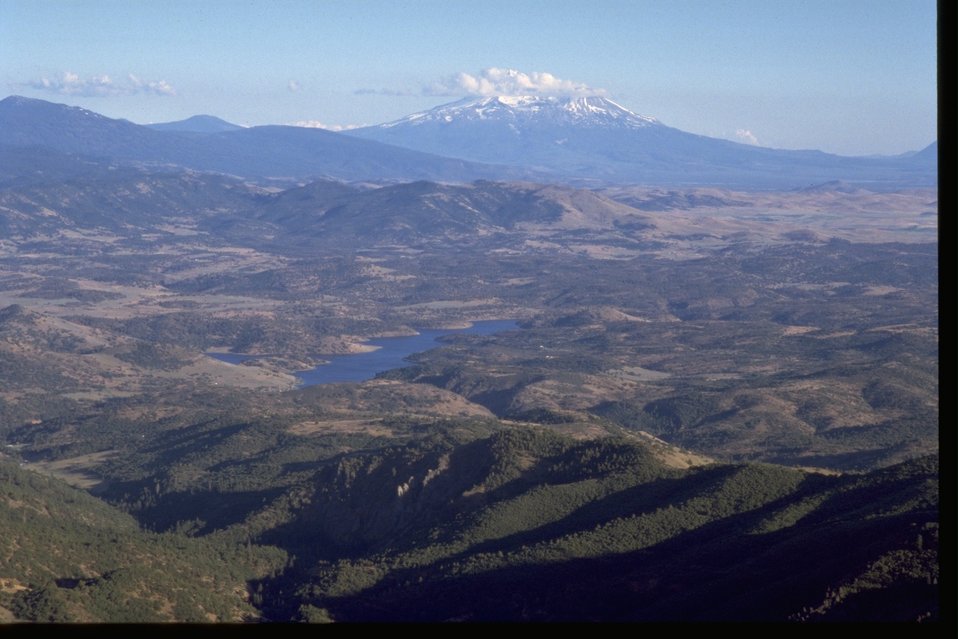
Soda Mountain Wilderness Study Area, dropping into Soda Valley with Irongate Reservoir.